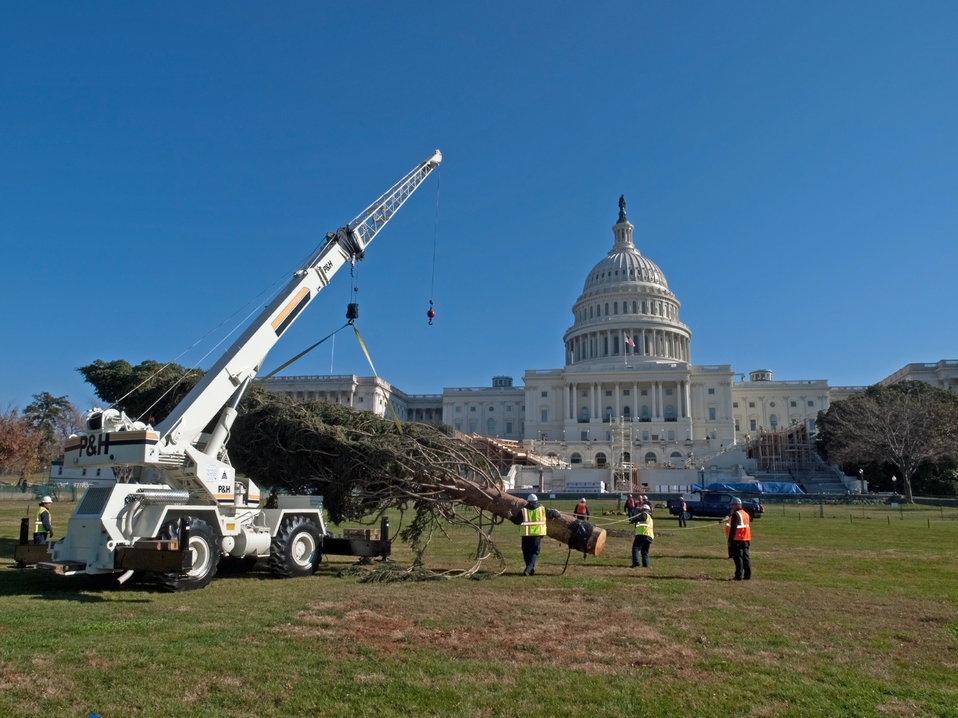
Members of the Capitol grounds crew move the 2012 Capitol Christmas Tree from its truck after it arrived in Washington, D.C. on Nov.26, 2012. The 73-foot Englemann spruce traveled from the White River National Forest in Colorado.